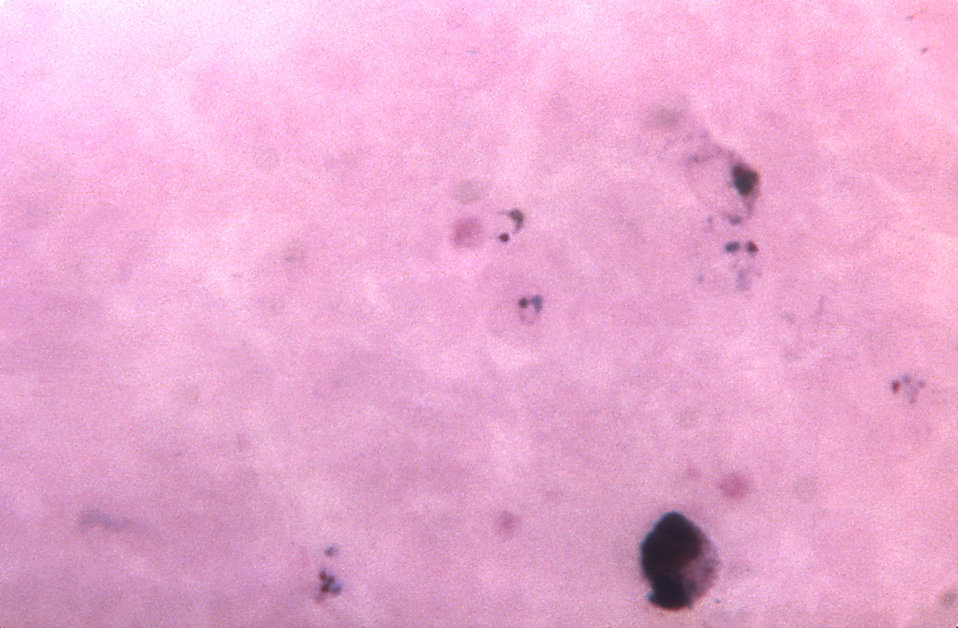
This thick film micrograph contains a ring form trophozoite of the parasite P. vivax; Magnified 1125x.